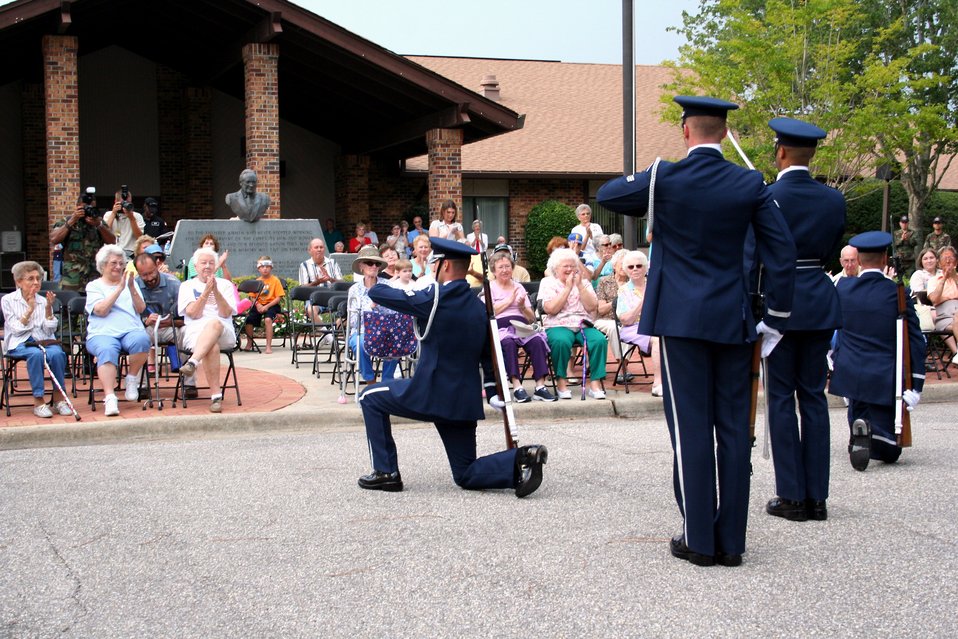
Air Force Honor Guard visits Enlisted Village

Airmen from the Air Force Honor Guard drill team complete a five-man precision drill routine for residents at the Air Force Enlisted Village July 13. Following the demonstration, the Airmen attended a reception with AFEV residents at Bob Hope Village.